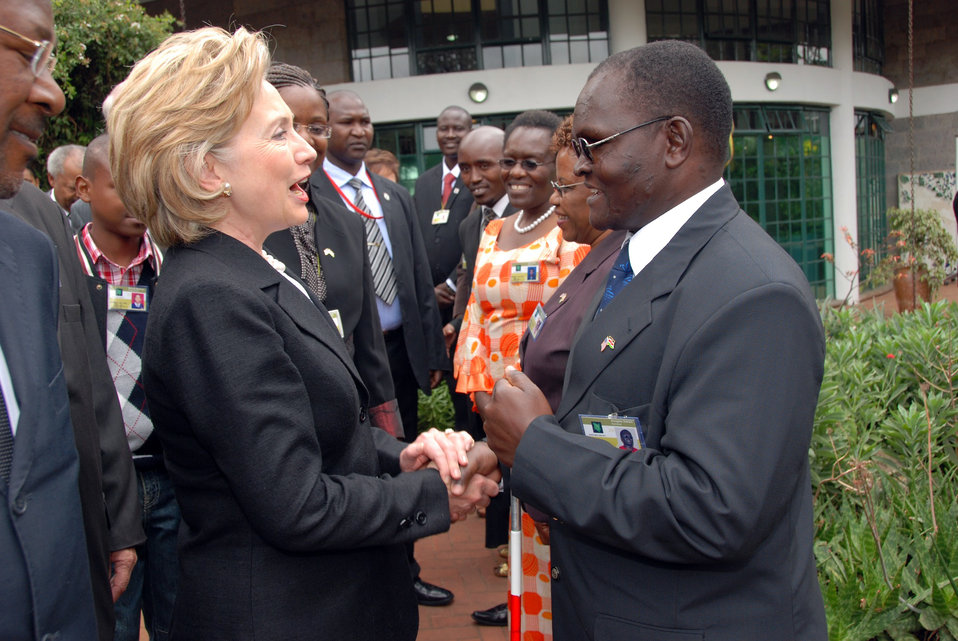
Secretary Clinton Attends Kenya Wreath Laying Ceremony

U.S. Secretary of State Hillary Rodham Clinton greets a participant at a wreath-laying ceremony in Memorial Park commemorating victims of the U.S. Embassy bombing, Nairobi, Kenya, August 6, 2009.